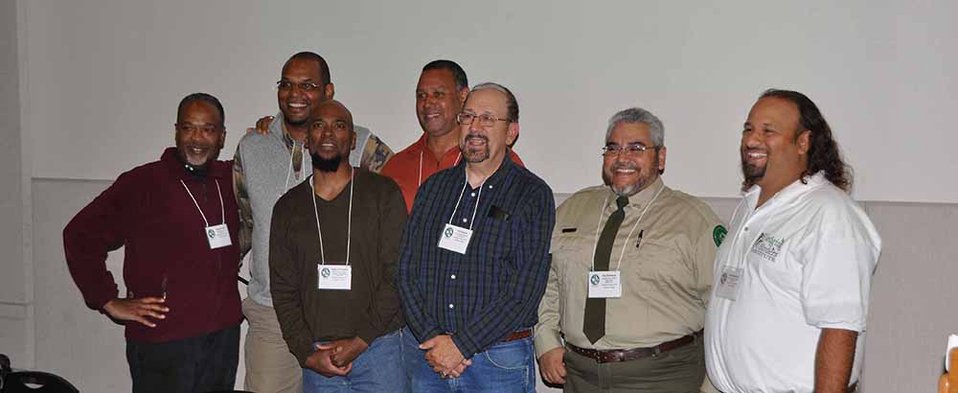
Sky Dogs with Dave Magpiong

Bloomington, Minn.: Sky Dogs, Bird Chick and Odd Bird land @ Minn. Valley NWR for birding convention. More: www.fledgingbirders.org
Sky Dogs Left to Right: Birding enthusiast Doug Gray, Clemson University Professor of Wildlife Ecology Dr. Drew Lanham, wildlife photographer and author Dudley Edmondson, Three Rivers Park District Senior Outdoor Education Manager Bob Gibson, birding enthusiast Paul J. Baicich, Texas Parks and Wildlife Ranger Roy Rodriguez and Fledging Birders Institute President Dave Magpiong.